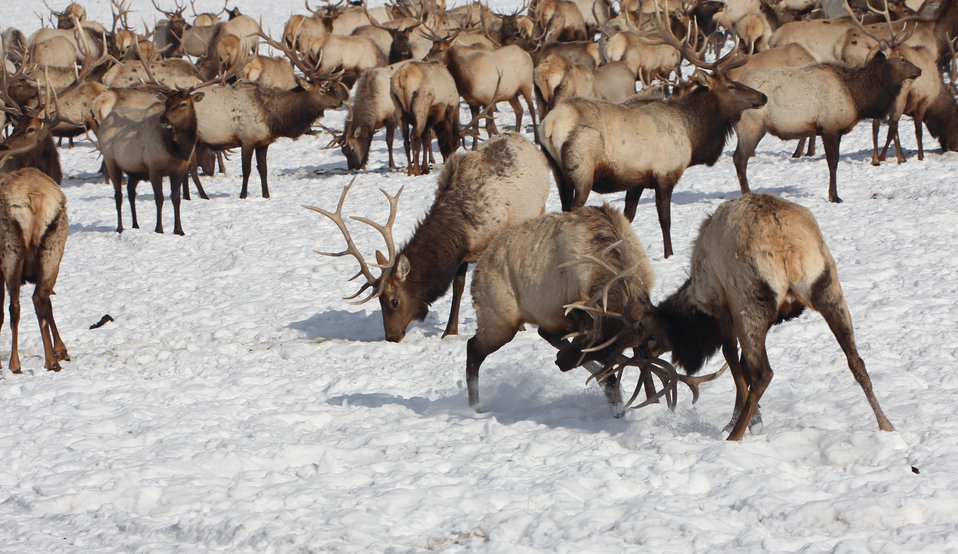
Boys Will Be Boys

Though bulls most actively display dominance during the fall rut, they can frequently be seen clashing antlers with rival males during the winter.

Credit: USFWS / Tony Hough, National Elk Refuge volunteer